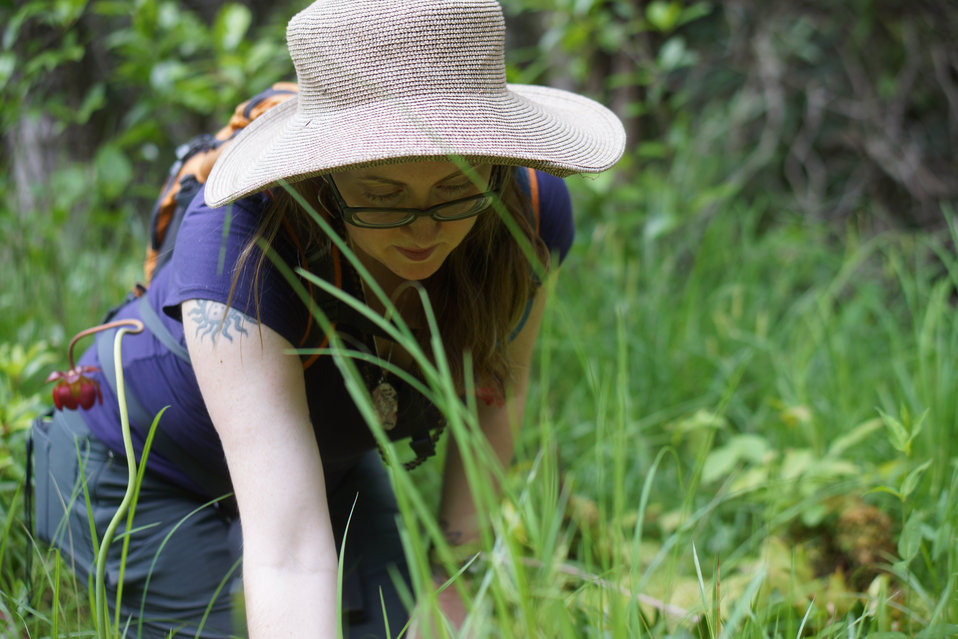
Carrie Brod

In May, bog conservationists from Tennessee, North Carolina, and Georgia convened in the north Georgia mountains for the spring, 2014 meeting of the Bog Learning Network. The event provided an opportunity for biologists to see, first hand, the result of management efforts at two north Georgia bogs. More importantly, the outings provided an opportunity to share innovative approaches to bog management, such as the role of the Georgia Plant Conservation Alliance in conserving rare plants and coordinating a cadre of volunteers to work on bog management.

The Bog Learning Network was convened in the winter of 2013 as a way to bring together people working for bog conservation across the Southern Appalachians. Southern Appalachian bogs are one of North America’s rarest habitats and home to many rare plants and animals.